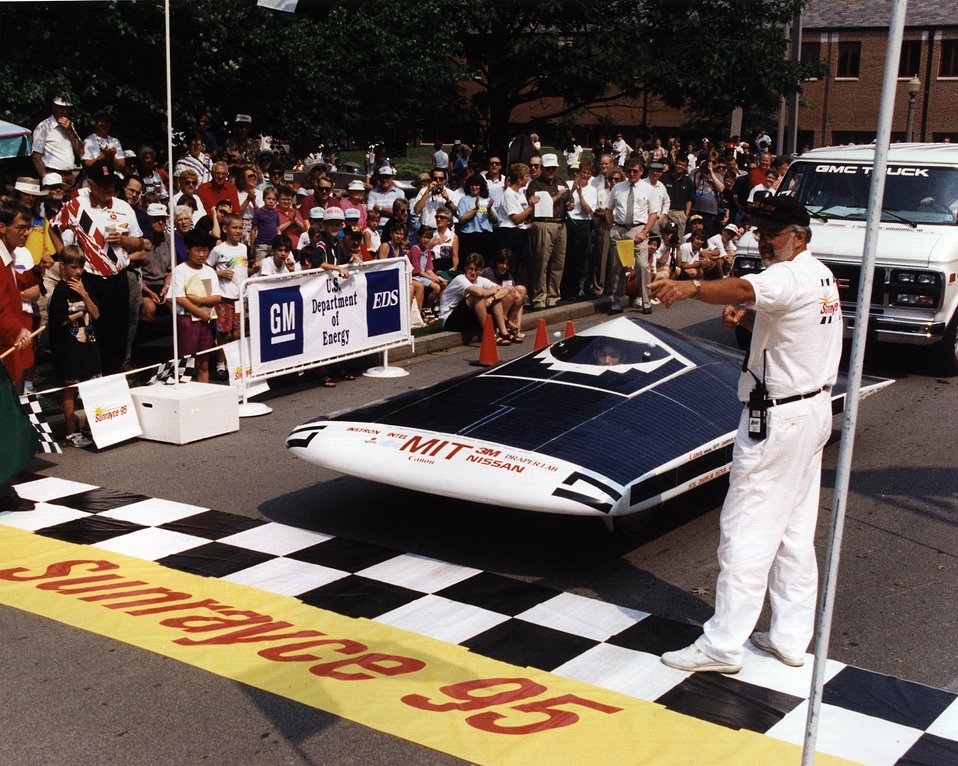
THE MASSACHUSETTS INSTITUTE OF TECHNOLOGY CAME IN FIRST WITH 'MANTA.'